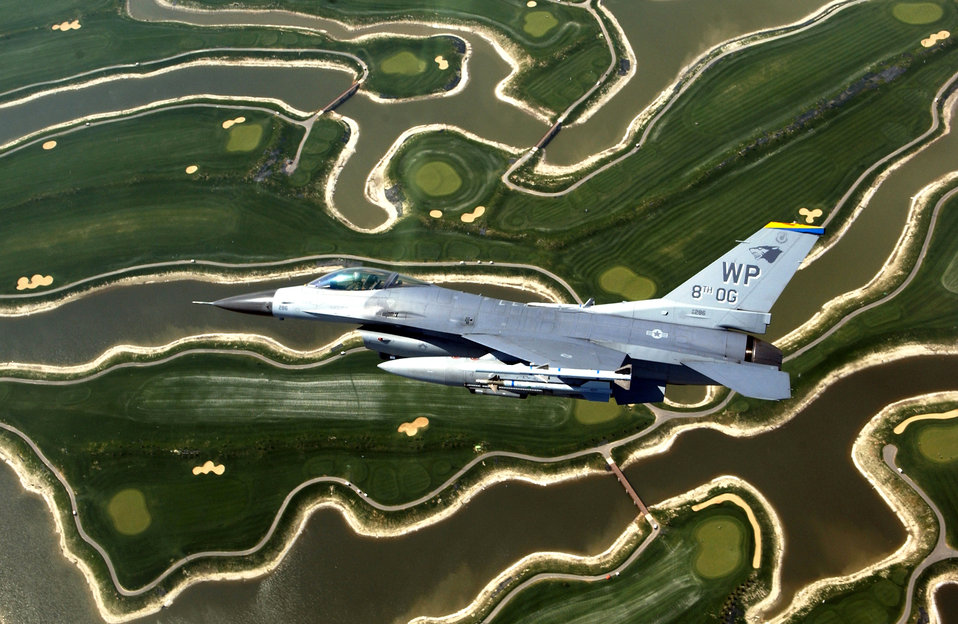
Falcons soar over Korea

An F-16 Fighting Falcon from the 8th Fighter Wing at Kunsan Air Base, South Korea, flies near the base on Friday, April 28, 2006. The F-16 was flown by Col. Eric Best, 8th Operations Group commander.